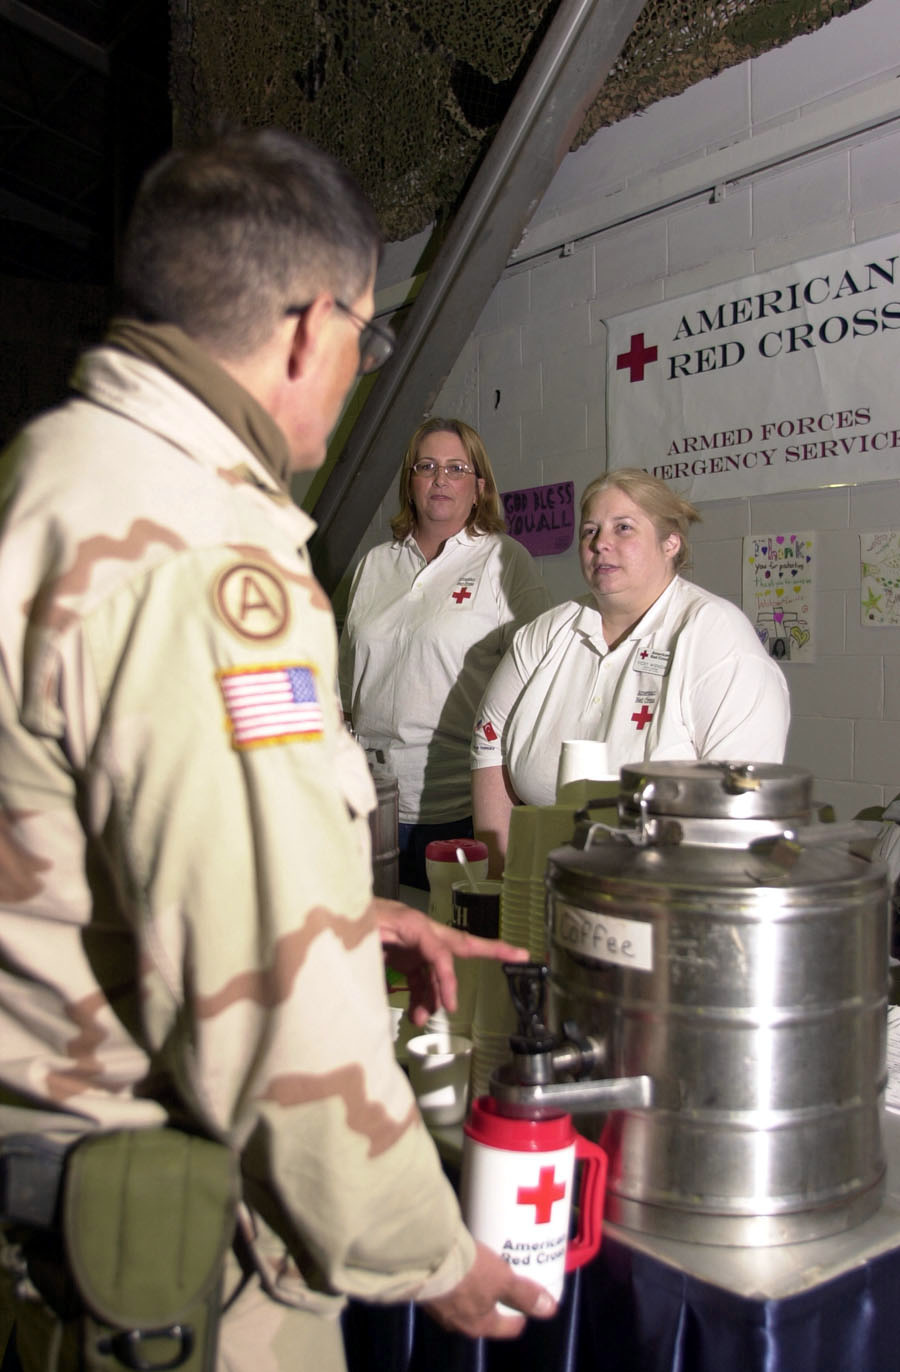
Coffee break

INCIRLIK AIR BASE, Turkey -- Vicky Wisnom (right) and Peggie Lawson offer coffee to Army Col. Donald